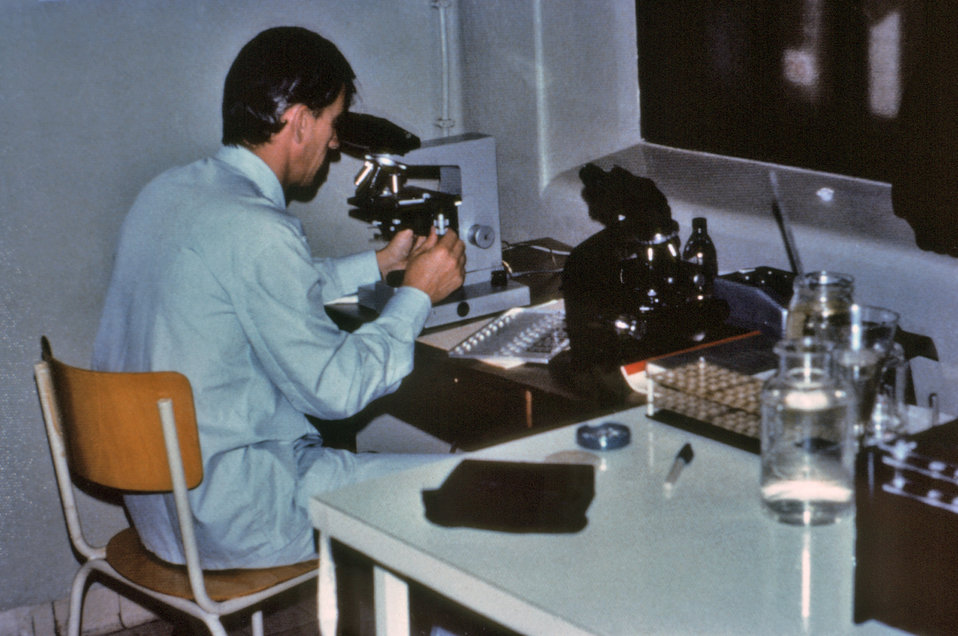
This photograph depicted Dr. Dennis Courtois, a French hematologist, as he examined blood samples taken from patients at Ngaliema Hospital, in Kinshasa, Zaire (now known as the Democratic Republic of the Congo) during the Ebola outbreak of 1976.